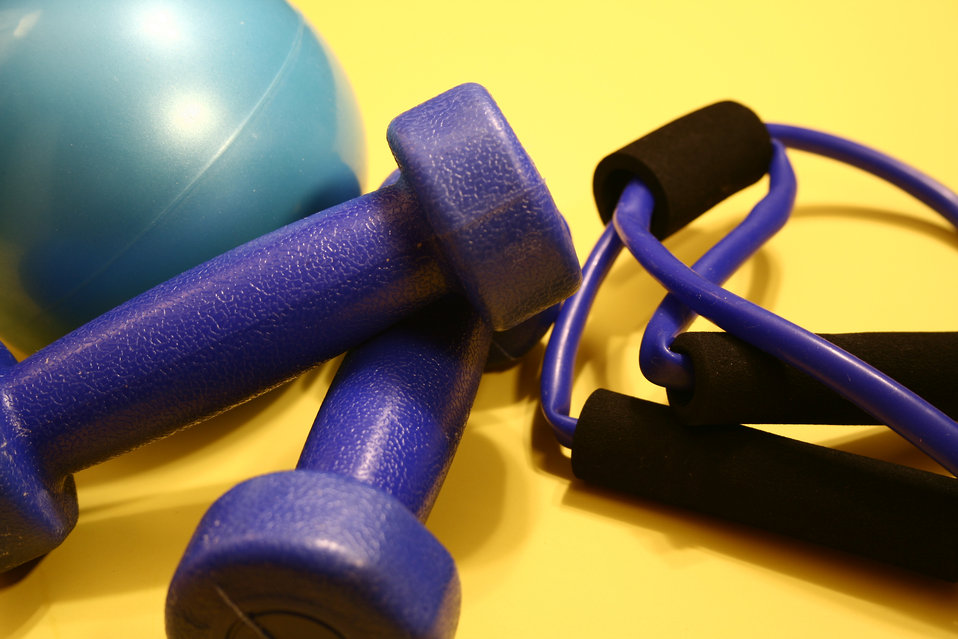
This image depicts a still life composed of exercise equipment including a turquoise rubber ball, a pair of light-weight dumbbells, and an elastic jump rope, all set atop a yellow tabletop.